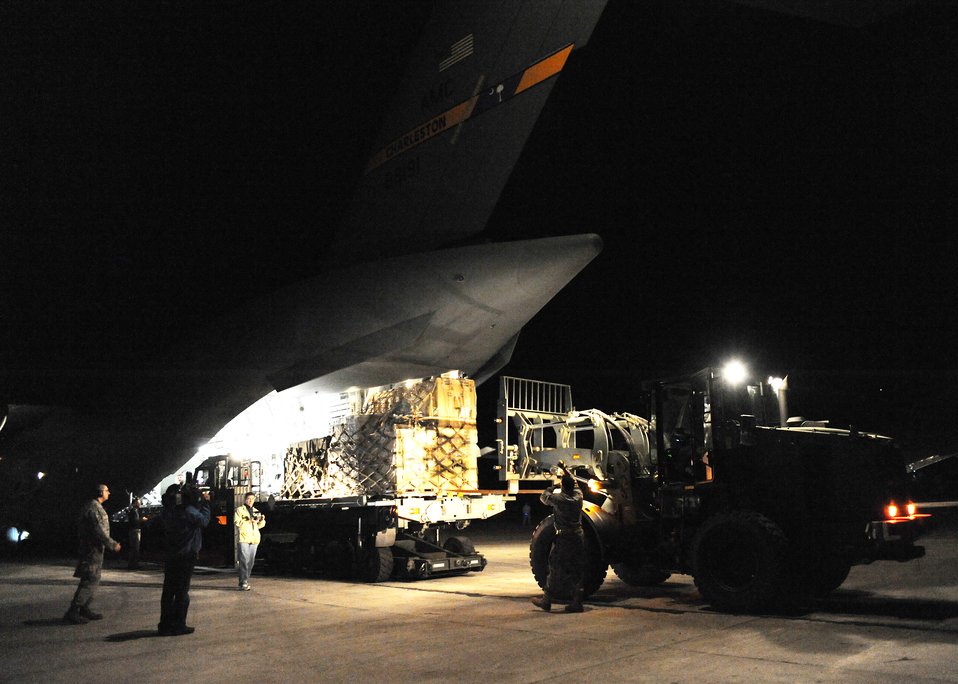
Haiti Humanitarian Effort

Equipment is unloaded from a C-17 Globemaster III in Port-au-Prince, Haiti, Jan. 15, 2010. Air Mobility Command is assisting the humanitarian relief effort in Haiti by bringing the assets necessary to run airfield operations, air traffic control, command and control, aerial port, maintenance and security.